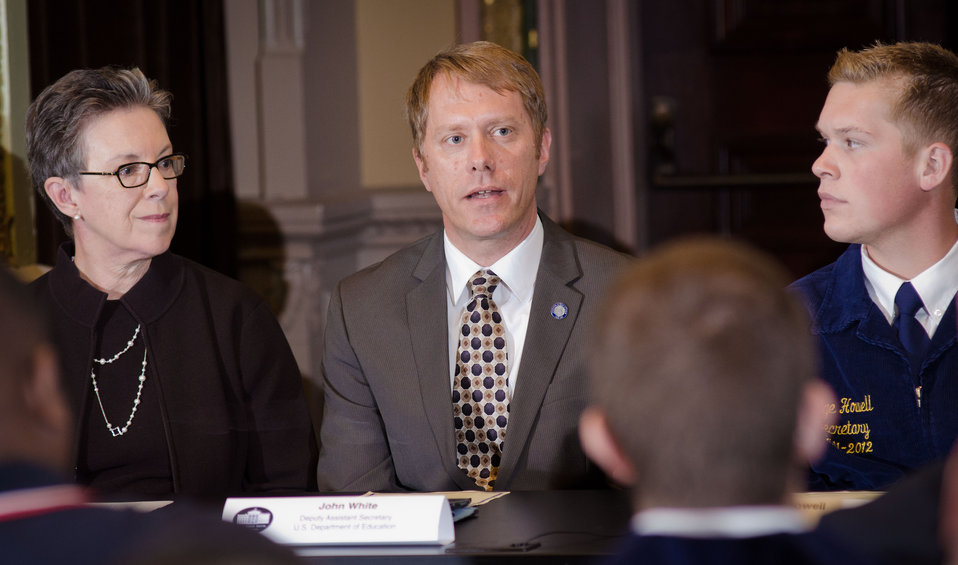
Education Deputy Assistant Secretary John White (center) introduces one of the speakers on the Youth Champions of Change panel in the Indian Treaty Room of the Executive Office Building in Washington, D.C. on Tuesday, Oct. 9, 2012. The Champions of Change program was created to honor ordinary Americans doing great work in their communities. Each week, a different sector is highlighted and groups of Champions, ranging from educators, entrepreneurs and community leaders, are recognized for the work they are doing to serve and strengthen their communities.